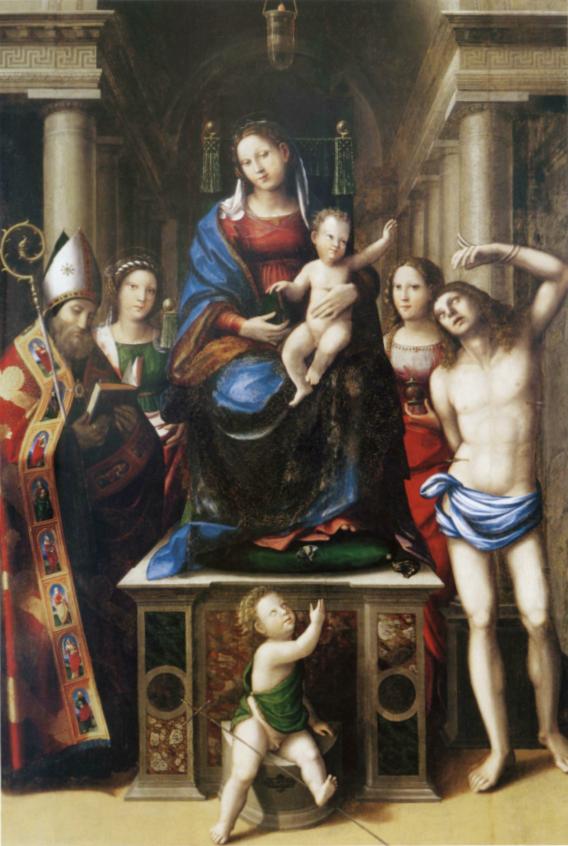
Coda Madonna and Child